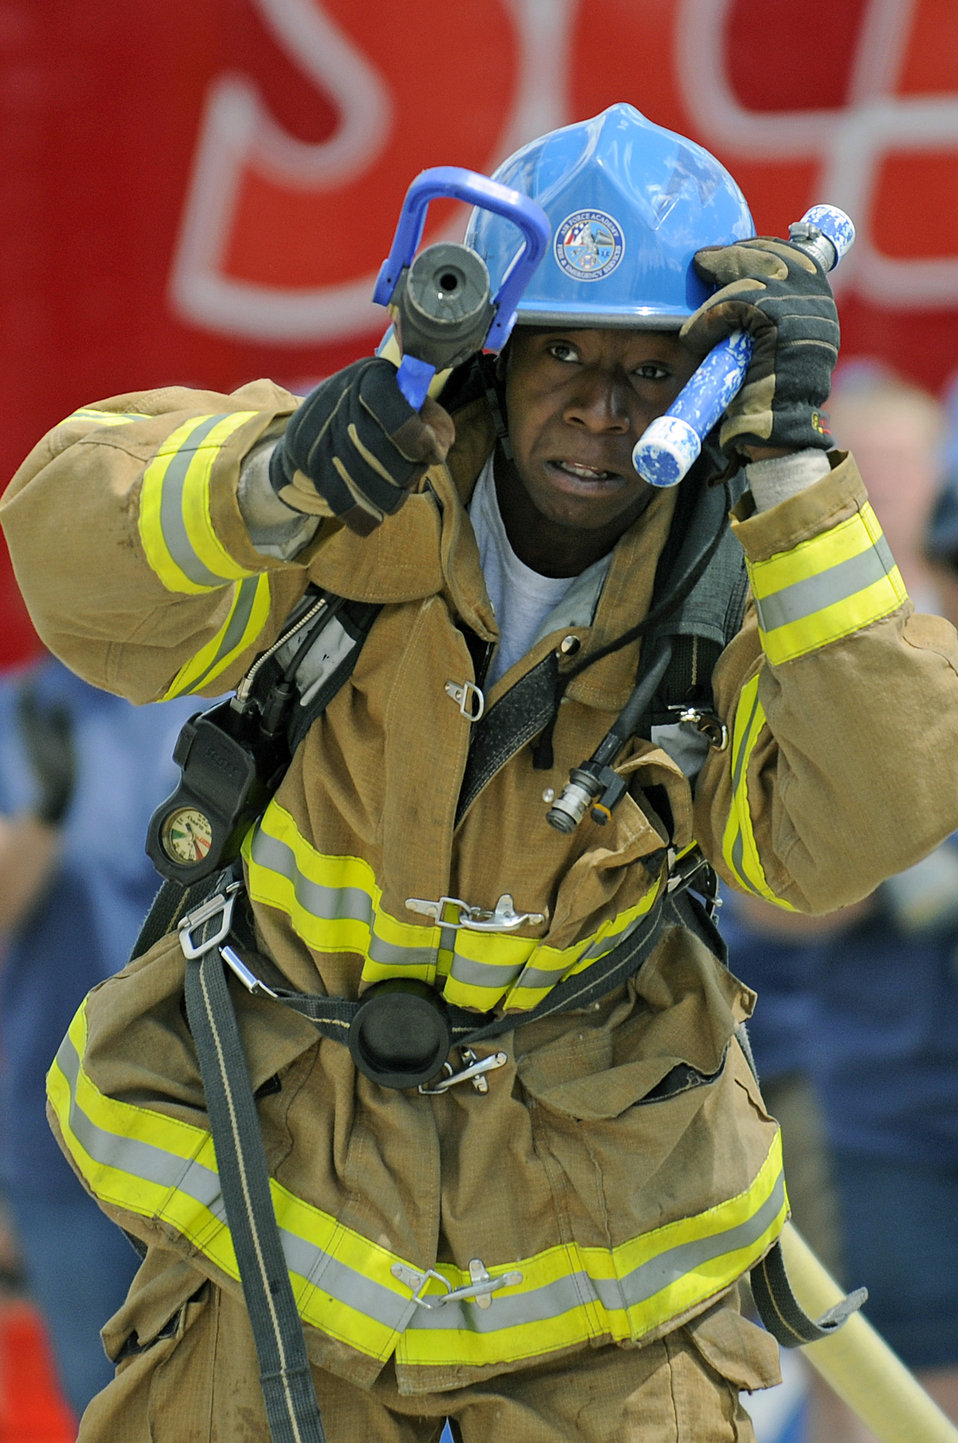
Firefighters Combat Challenge

Air Force Academy firefighter Airman 1st Class Joseph Stevens storms towards the target during the two-day regional Firefighter Combat Challenge competition held June 24/25 at the Air Force Academy's Falcon Stadium.